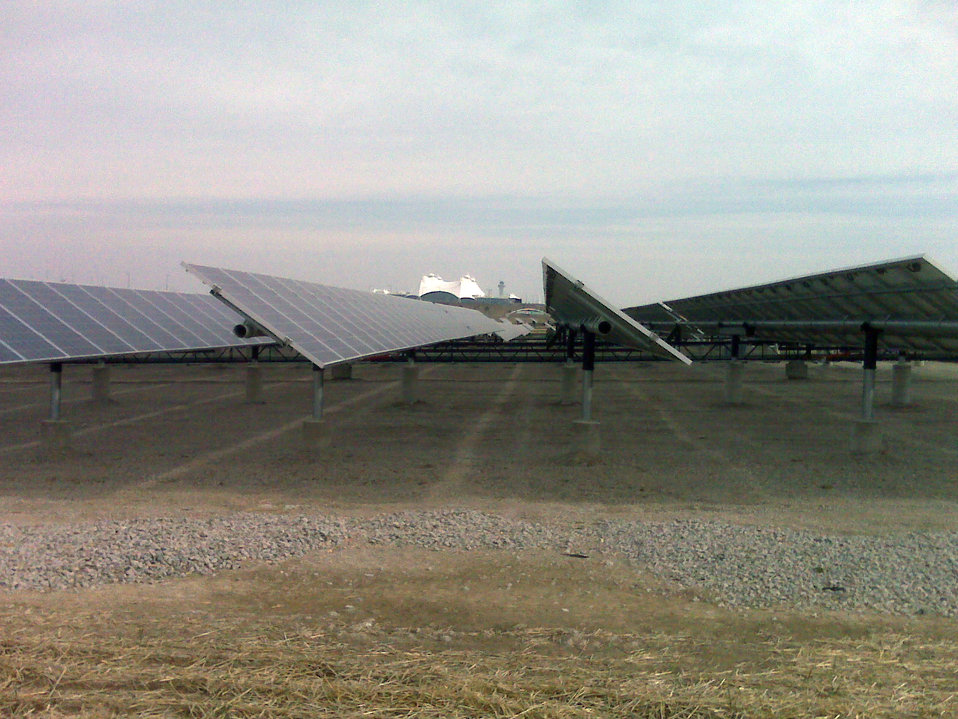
Many airports are adding solar arrays or other renewable energy sources to their facilities. U. S. Department of Agriculture researchers are studying wildlife use on and near these areas to determine practices that limit use by wildlife species most hazardous to aircraft.